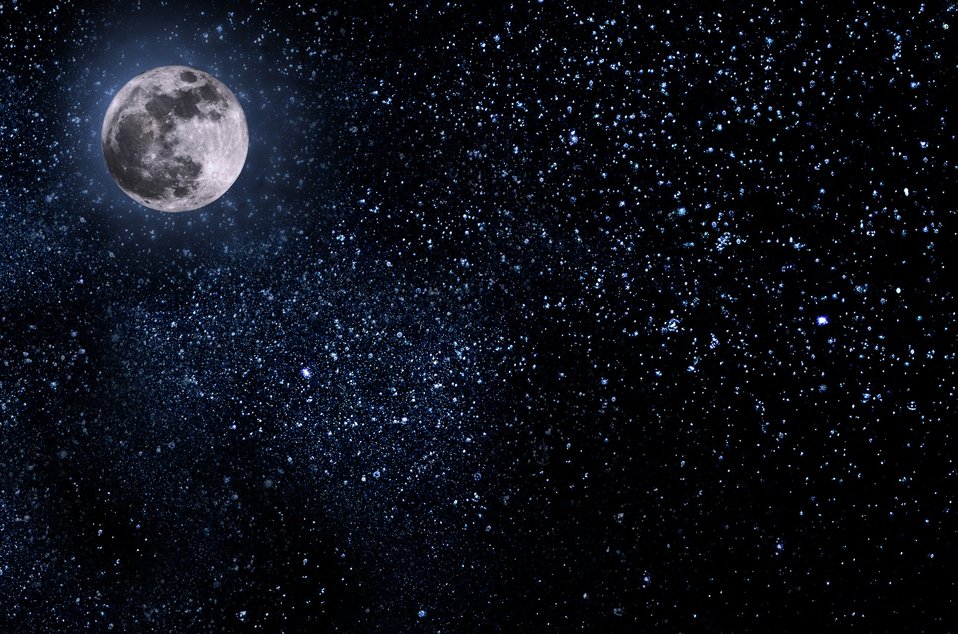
Nightly sky with large moon.